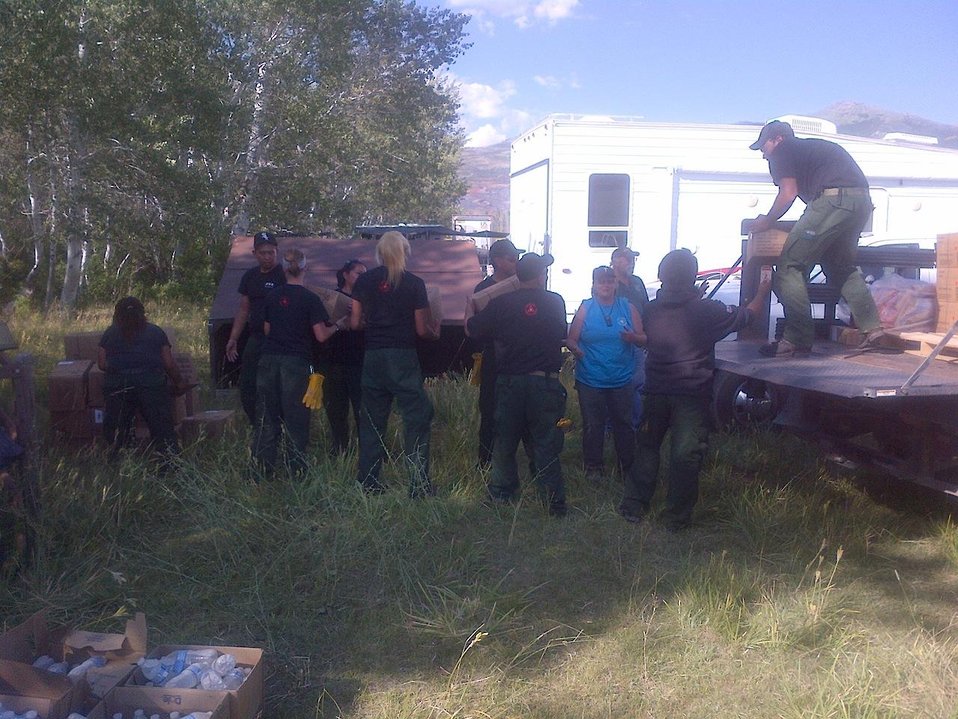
Fire crew helps to unload supplies at the Smith Ranch Fire on Jul. 21, 2013. The Smith Ranch Fire located 10 miles northwest of Jiggs, NV began on Jul. 19, 2013 by lightning and has consumed approximately 2,759 acres. The Smith Ranch Fire is 100% contained.